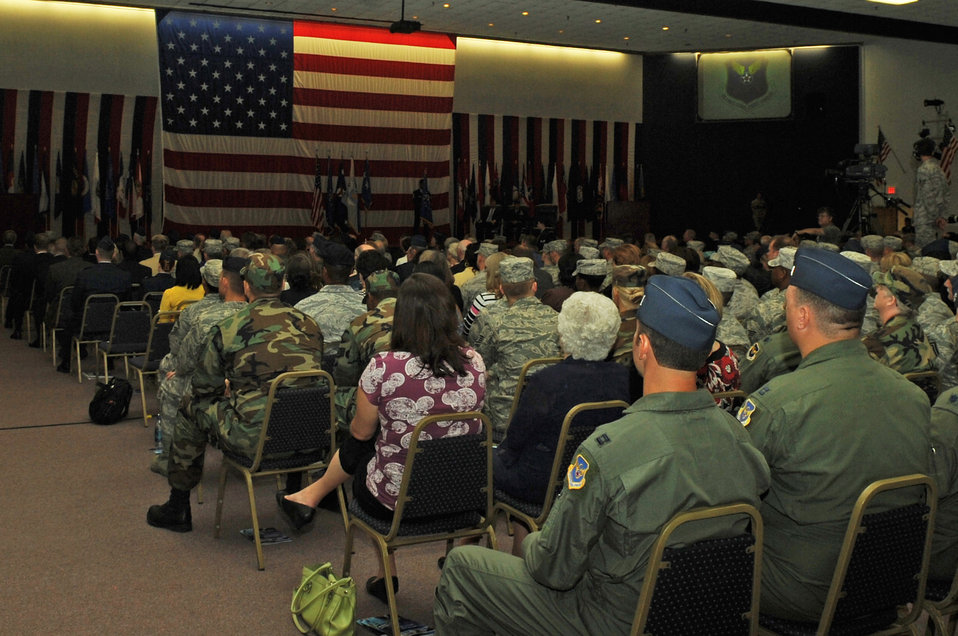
Air Force Global Strike Command activated

Congressional members, elected officials, community leaders, Airmen and other special guests attend the Air Force Global Strike Command activation ceremony at Barksdale Air Force Base Aug. 7. The new major command is the latest -- and largest -- reorganization in the Air Force's ongoing effort to reinvigorate the Air Force nuclear enterprise..